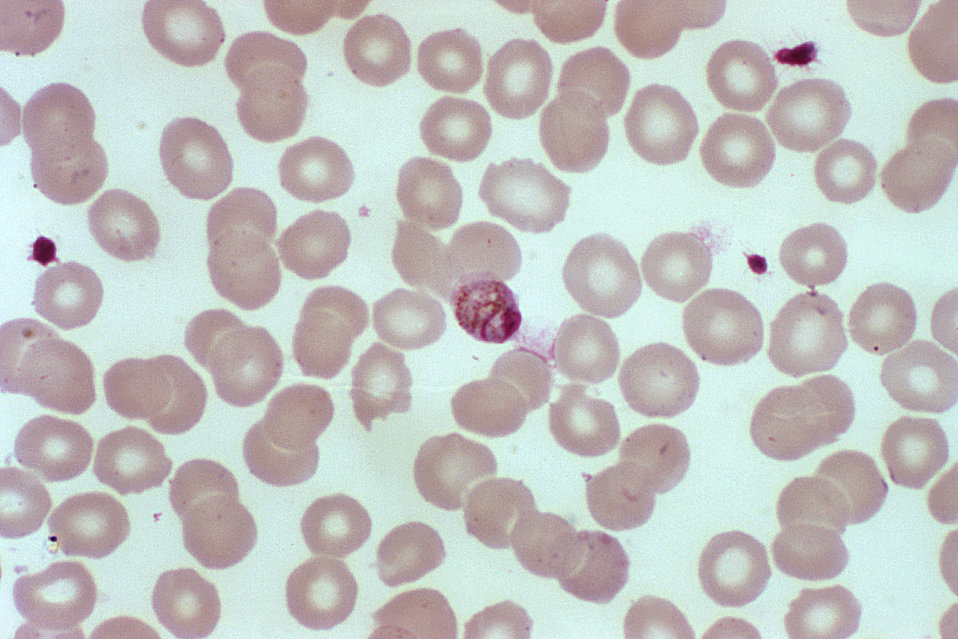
This photomicrograph shows a mature Plasmodium malariae trophozoite within an infected RBC.